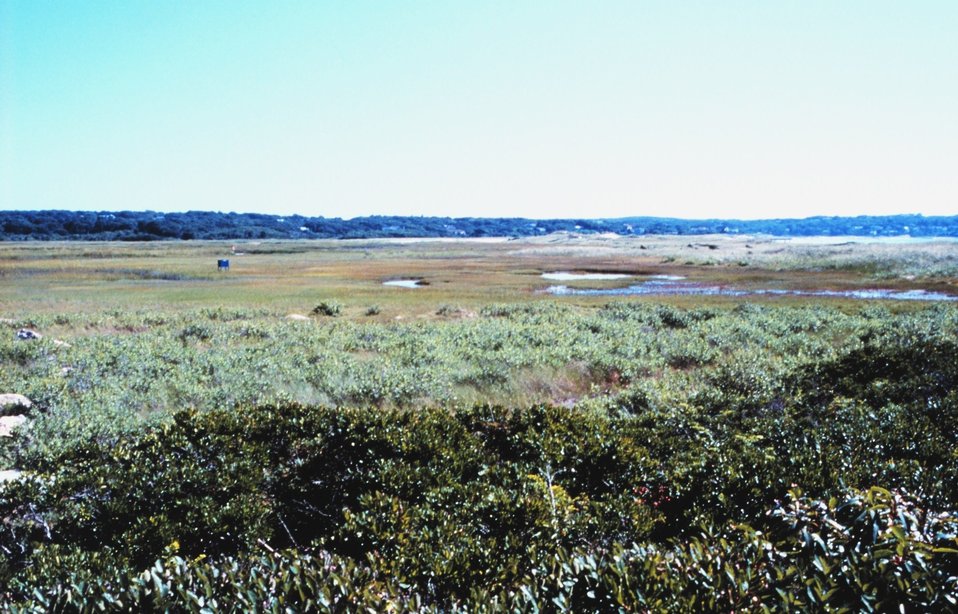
Great Sippewissett Marsh, West Falmouth